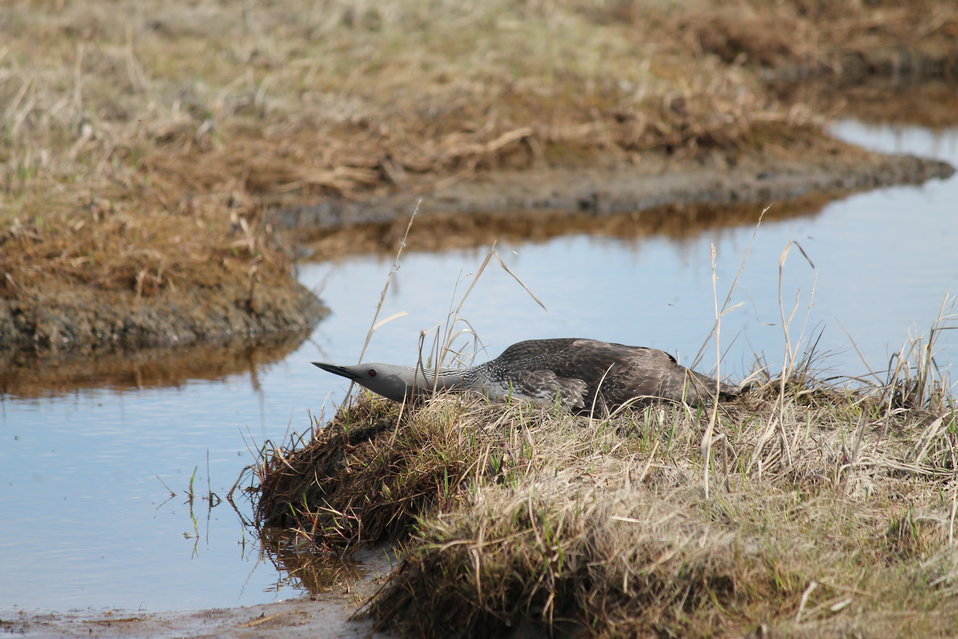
Loon

A red-throated loon is sitting on her nest. Their nests are called 'srapes'. They are a simple nest that is nothing more than a shallow depression in the ground. The depth of a scrape can vary, but usually they are just deep enough to keep the eggs in place.

Loon scrapes are generally built by the loon rocking its body back and forth to form a depression. Lining is minimal and may include small quantities of grass, gravel, feathers, moss, bits of shells or other and debris. But it is not uncommon to not have any lining at all.

Because scrape nests are more exposed than other types of nests, loon eggs have camouflaged markings to help them blend into the background and be less visible to predators. Loon eggs are a dark greenish brown with black speckles.

USFWS Yukon Delta NWR